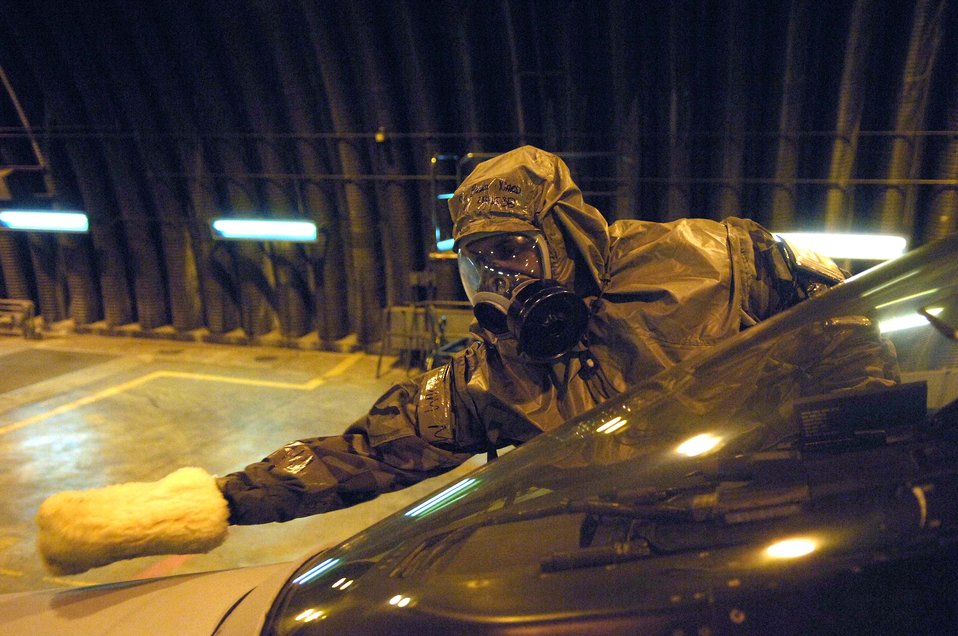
The search is on for bad chemicals

Staff Sgt Brandon Ward uses specially treated mitt March 6 to decontaminate an F-16 Fighting Falcon during a NATO Tactical Evaluation at Aviano Air Base, Italy. The evaluation is to determine if Aviano's 31st Fighter Wing is prepared to support NATO Response Force 9/10.